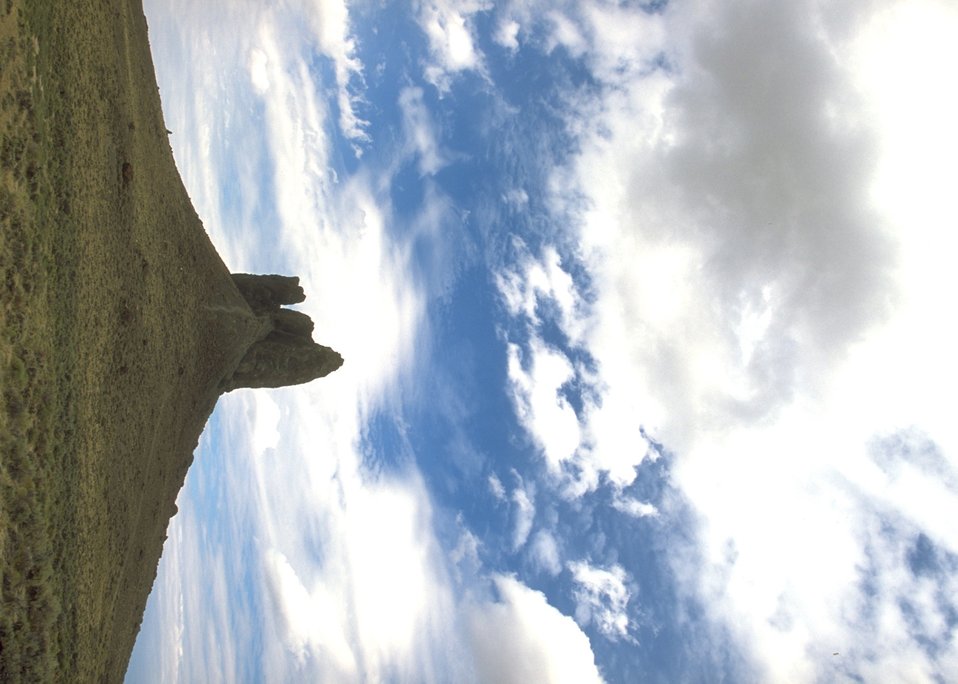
Boar's Tusk, Rock Springs Field Office.